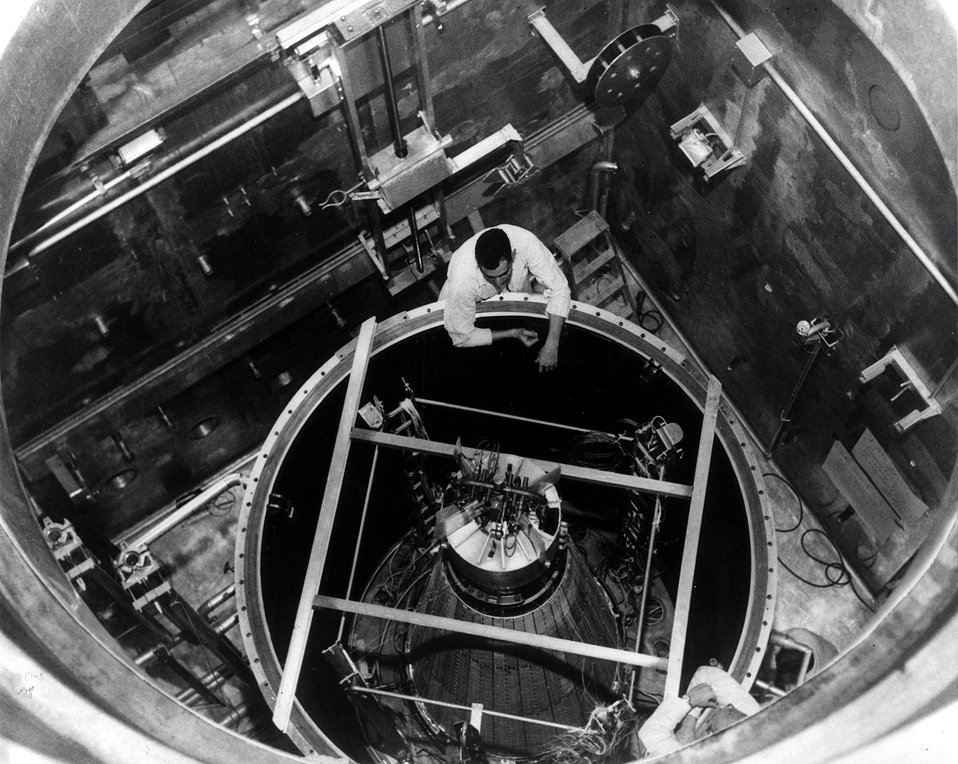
A full year of generating electricity continuously and without adjustment by a human operator has been reached by this flight-qualified nuclear reactor power system for space.